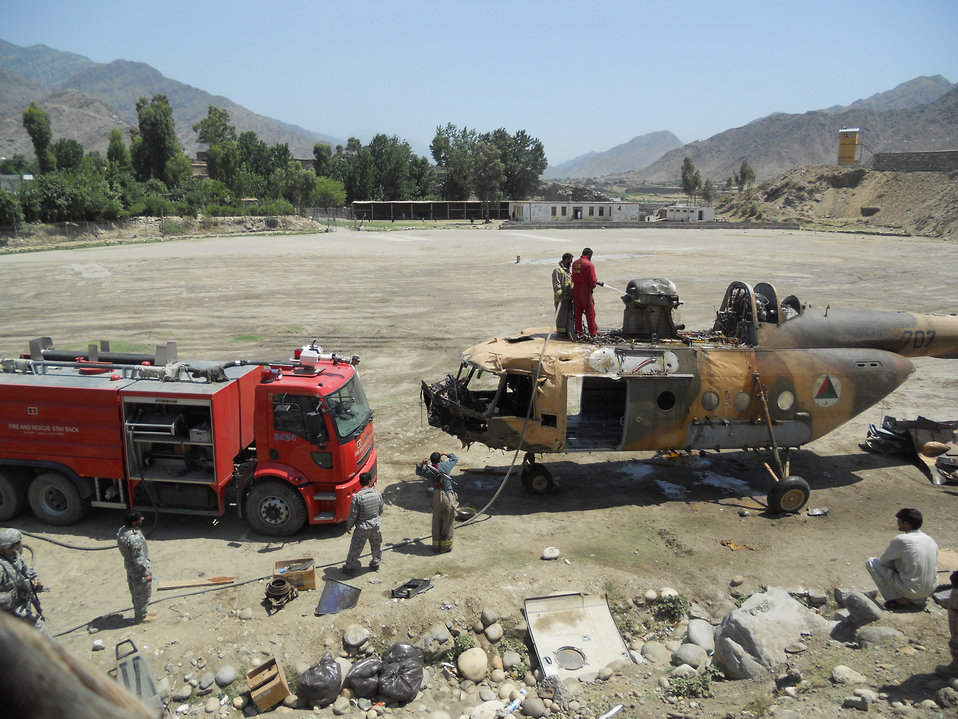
AAF Mi 17 crash

With support from Task Force Bronco 4, teams removed portions of a Mi-17 helicopter after a crash in Kunar province. Thirteen members of the 438th Air Expeditionary Wing responded to the incident scene. There were six people on board the aircraft when it crashed and officials indicate there were no life-threatening injuries. Airmen were on scene of the crash for more than a week.